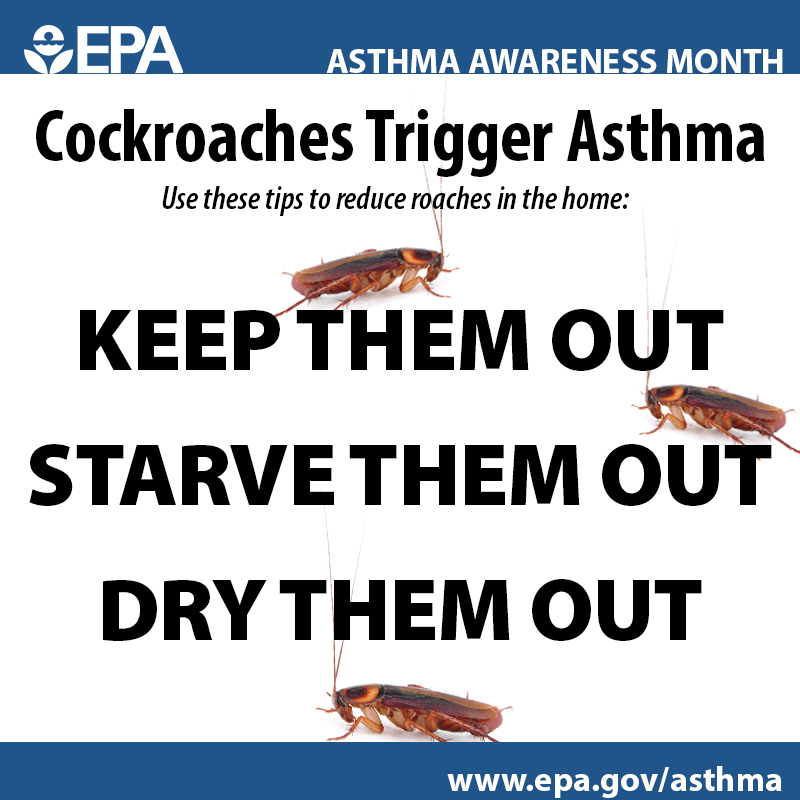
Cockroaches Trigger Asthma

Nobody likes cockroaches, but did you know they’re #asthma triggers? Here’s how to make sure they don’t move into your home: keep them out, starve them out, and dry them out.